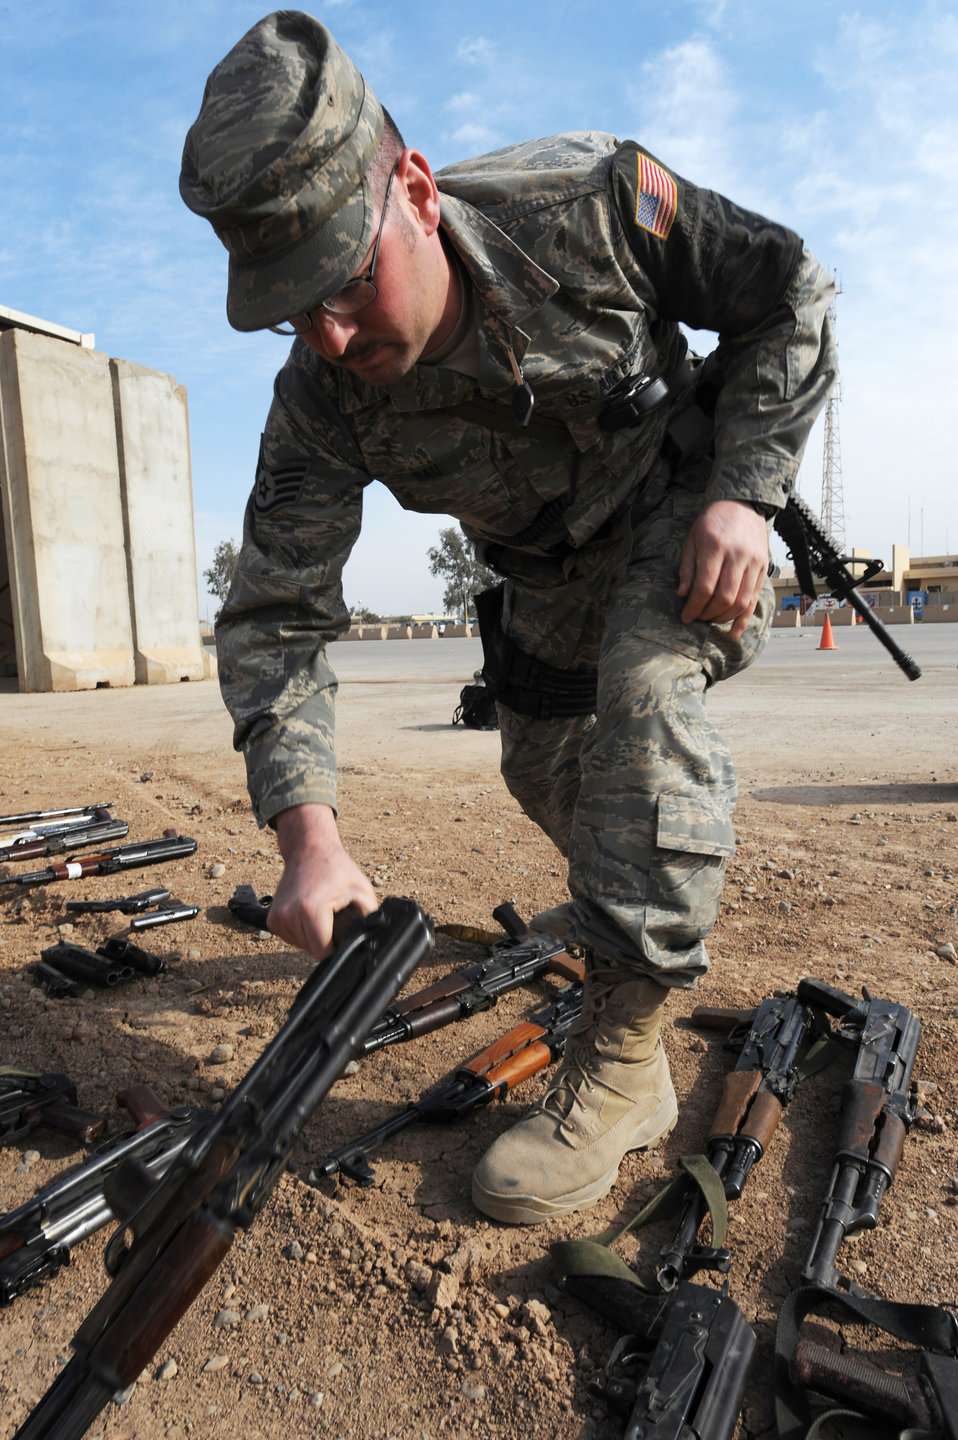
Security forces destroy Iraqi weapons for base security

Staff Sgt. Richard Rau clears enemy weapons that have been laid out and marked for destruction at Joint Base Balad, Iraq, March 18. The various weapons were collected over time from amnesty boxes and units to enhance base security and force protection. Sergeant Rau is a 332nd Expeditionary Security Forces Squadron patrolman.